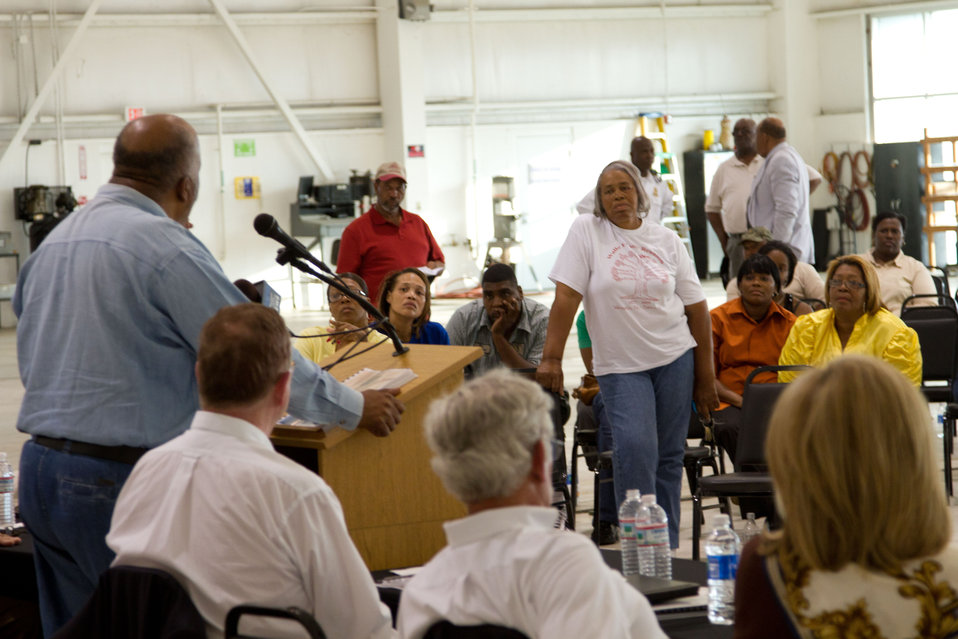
Mississippi Congressman Bennie Thompson hosted a farmers outreach event, to express the importance for record keeping, government and commercial claims, and appeals at Tunica Airport in Mississippi on Thursday, May 19, 2011. Along with Congressman Thompson, was U.S. Department of Agriculture’s Undersecretary for Rural Development Dallas Tonsager; Acting Under Secretary Farm and Foreign Agriculture Service Michael Scuse; Rural Development State Director Trina N. George and FEMA, State and Local officials.